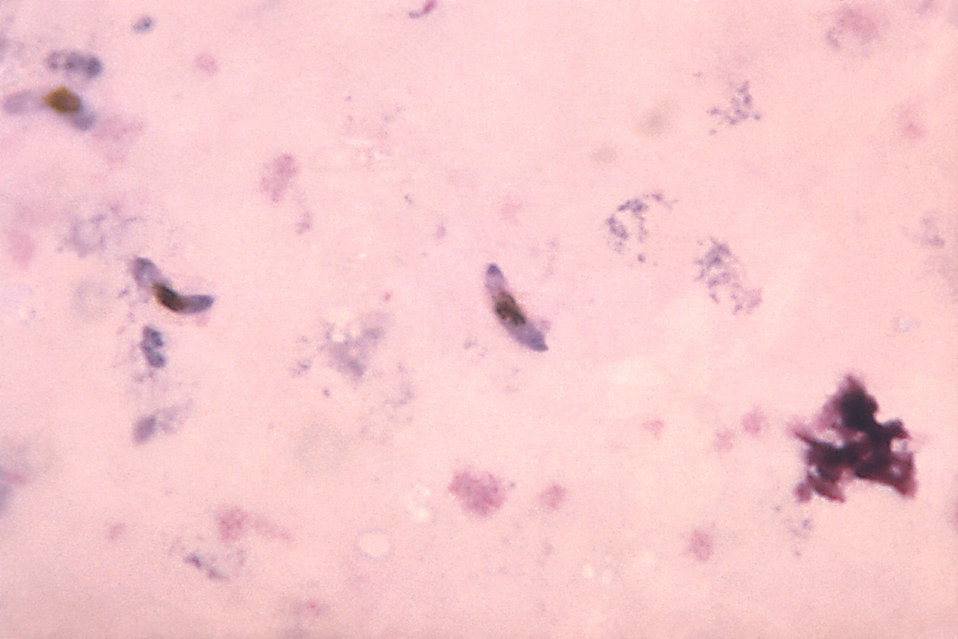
This thick film micrograph reveals two Plasmodium falciparum gametocytes; one is crescent-shaped (Lt.).